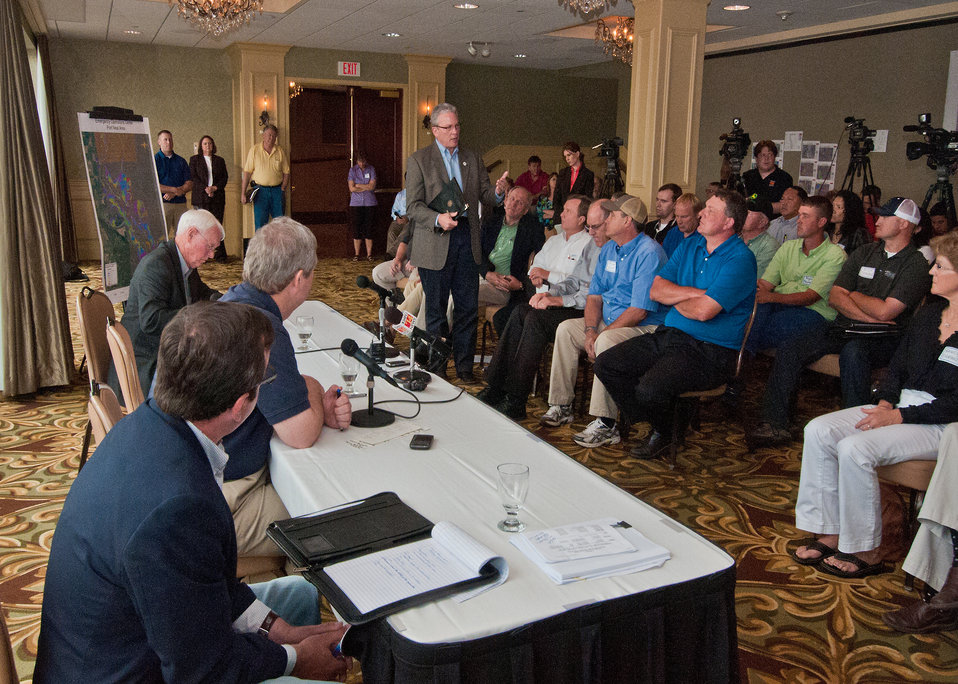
Dan Steinkruger, Executive Director, Farm Services Agency, Nebraska, offers advice and assistance available through the United States Department of Agriculture, Farm Services Agency associated with floodwaters along the Missouri River affecting Iowa and Nebraska. Seated to Steinkrugers’ right are John Berge, Executive Director, USDA National Food and Agriculture Council, Agriculture Secretary Tom Vilsack and Dayle Williamson, State Agriculture Representative for Senator Ben Nelson. USDA administers many programs to assist with recovery in rural areas reeling from natural disasters. USDA and the entire federal family have been working with state and local officials to provide relief to residents, farmers, ranchers and businesses. On Friday, June 17, 2011, USDA Photo by Bob Nichols.